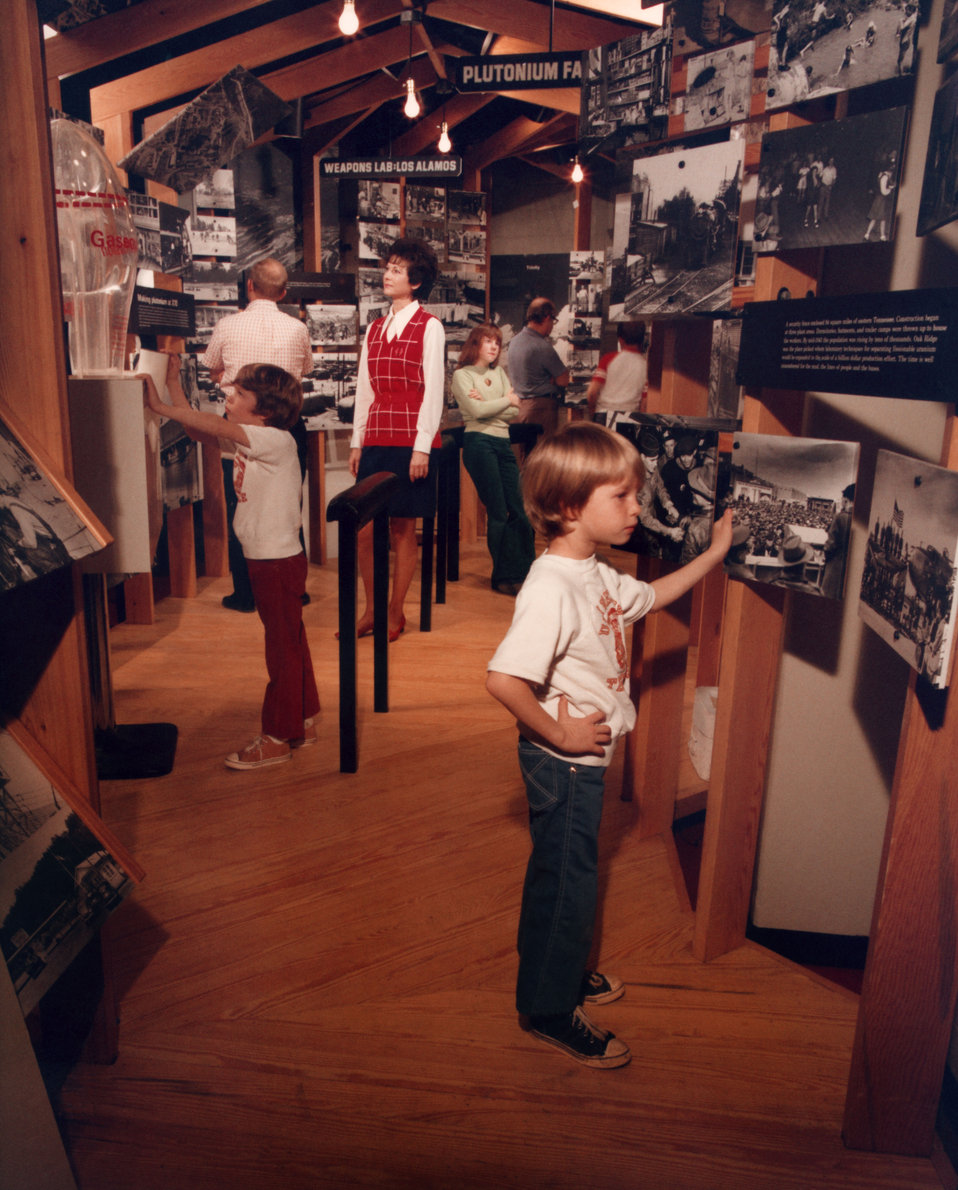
Exhibit American Museum of Science and Energy 'Energy in Defense of Freedom'

75-32-8 DOE photo by Frank Hoffman

Exhibit American Museum of Science and Energy 'Energy in Defense of Freedom' Jan. 1975